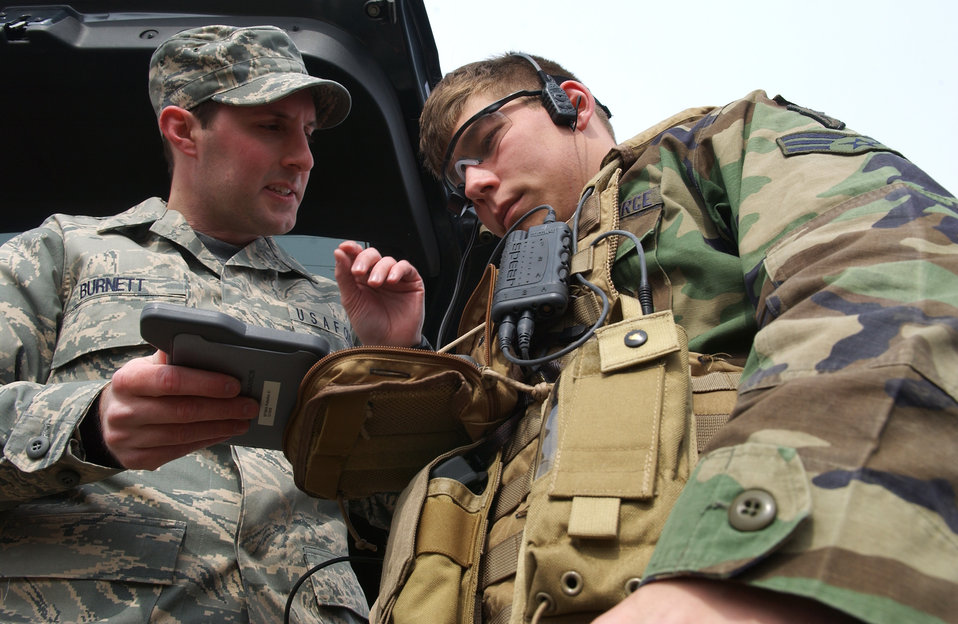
New experimental equipment enhances Airmen capabilities

Gregory Burnett explains the capabilities of a MR-1 computer that can send Global Positioning Satellite coordinates to an aircraft to Senior Airman Nicholas Halladay during Exercise Northern Edge May 5 at Eielson Air Force Base, Alaska. Tactical air control party Airmen are helping test new experimental equipment in the field. Airman Halladay is a TACP assigned to Det. 1, 3rd Air Support Operation Squadron from Fort Richardson, Alaska. Mr. Burnett is a chief engineer with Air Force Research Labs from Wright-Patterson AFB, Ohio.